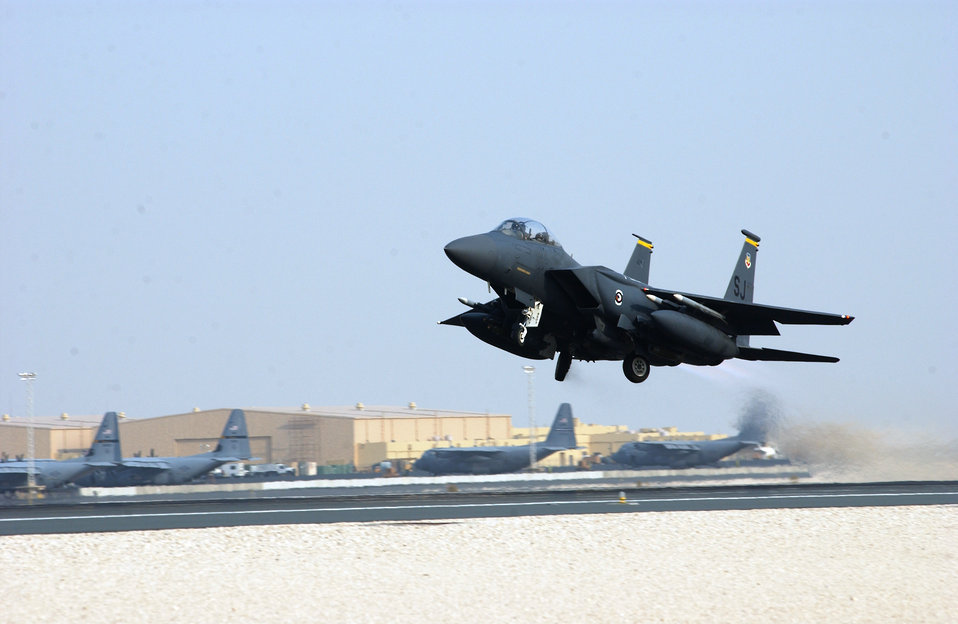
Keeping the strike in the Strike Eagles

An F-15E Strike Eagle from the 335th Fighter Squadron takes off from a forward-operating base in Southwest Asia Sept. 3.